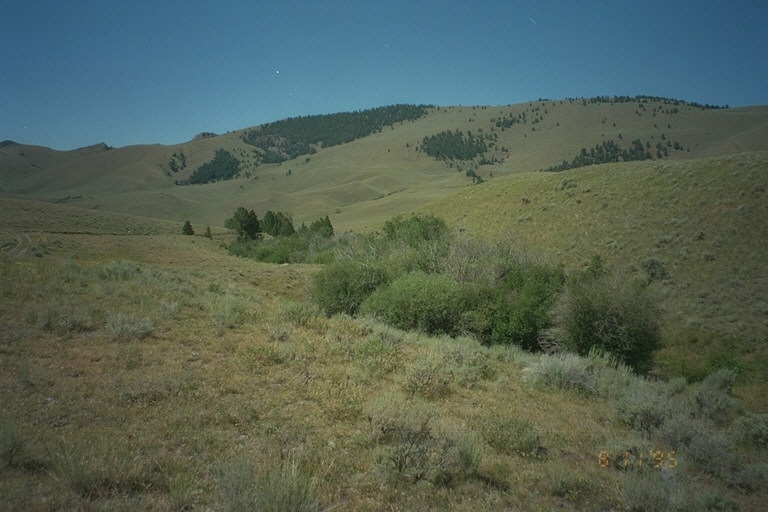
Riparian area Public Lands Salmon Field Office UCSC Upper Columbia Salmon Clearwater District